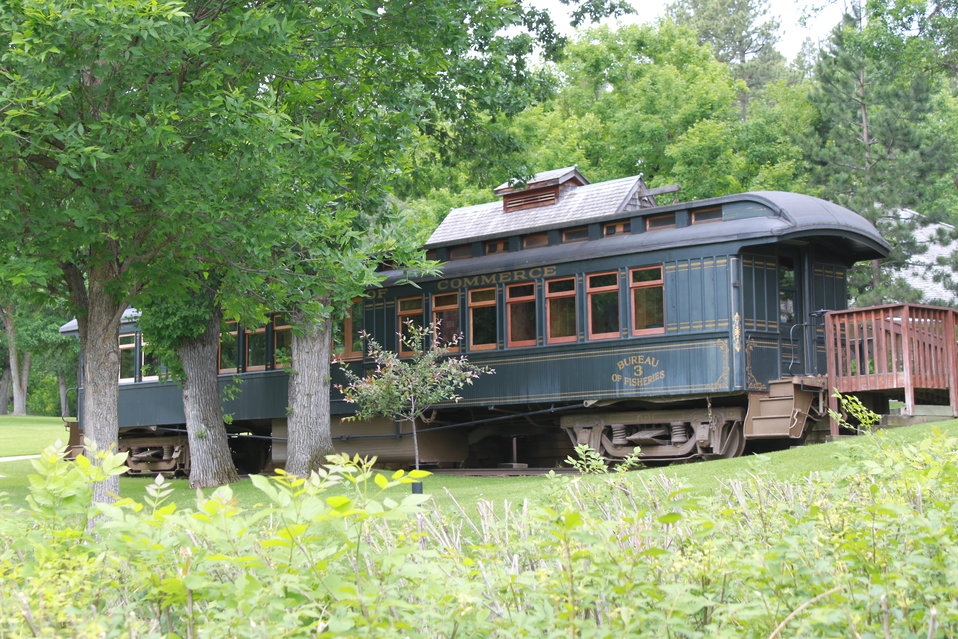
Fish Car at DC Booth Historic Hatchery

This rail car has been restored to depict the work performed by fisheries professionals from years past. Fish cars moved fish over rail before the advent of tank trucks on modern highways. This car has come to rest at D.C. Booth Historic National Fish Hatchery & Archives in Spearfish, South Dakota.

Credit: Craig Springer / USFWS

Photo Contest Entry #149